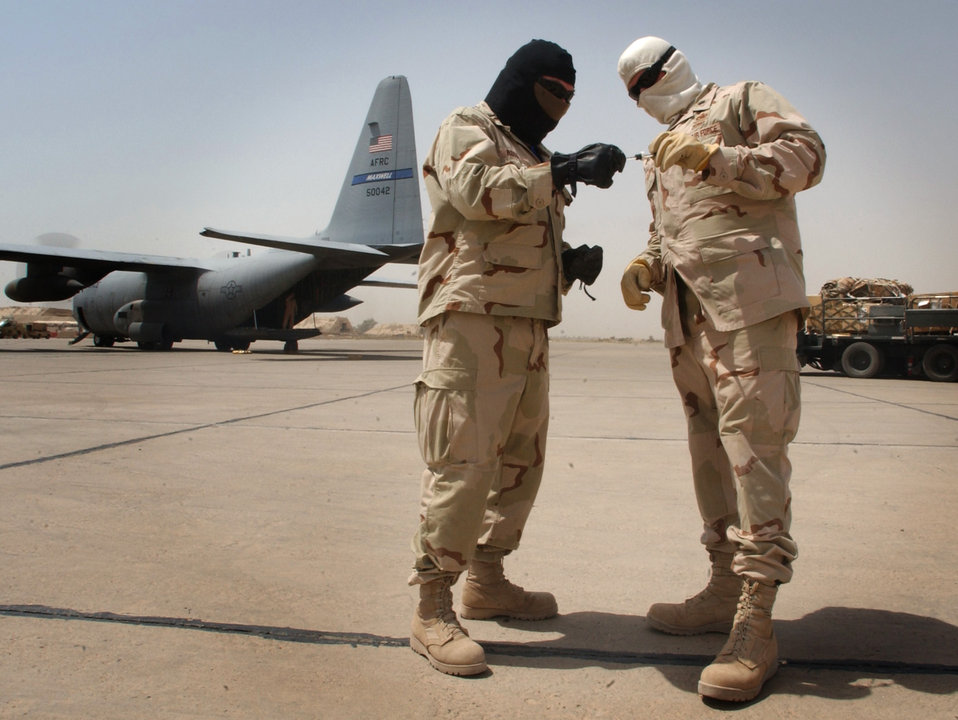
Deployed leaders take 'vest-ed' interest in being cool

BAGHDAD, Iraq -- Capt. James Ross (left) and Lt. Col. Tom Sadlo read a thermometer before testing a cool vest here. The two officers are part of a team that conducted the initial testing on the vest. Captain Ross is a bioenvironmental engineer with the 447th Air Expeditionary Group, and Colonel Sadlo is the 447th Expeditionary Logistics Readiness Squadron commander.